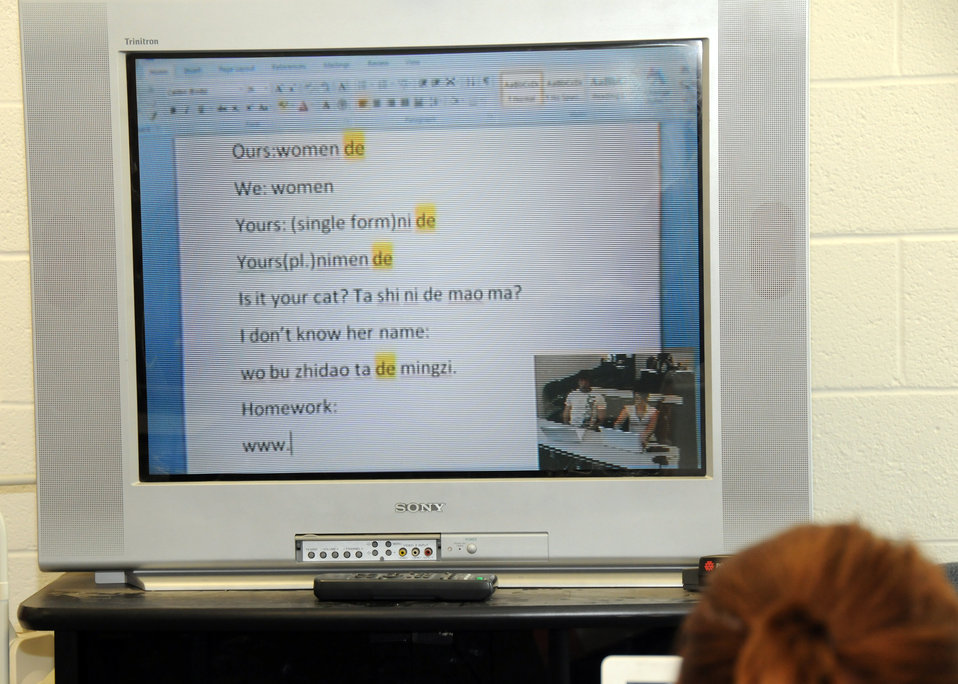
The students at Crescent High School in Crescent, Oklahoma are taking online courses in foreign languages, such as Chinese, due to the U. S. Department of Agriculture (USDA) Rural Development (RD) Distance Learning and Telemedicine Program (DLT) allocated through the American Recovery and Reinvestment Act of 2009 (ARRA).